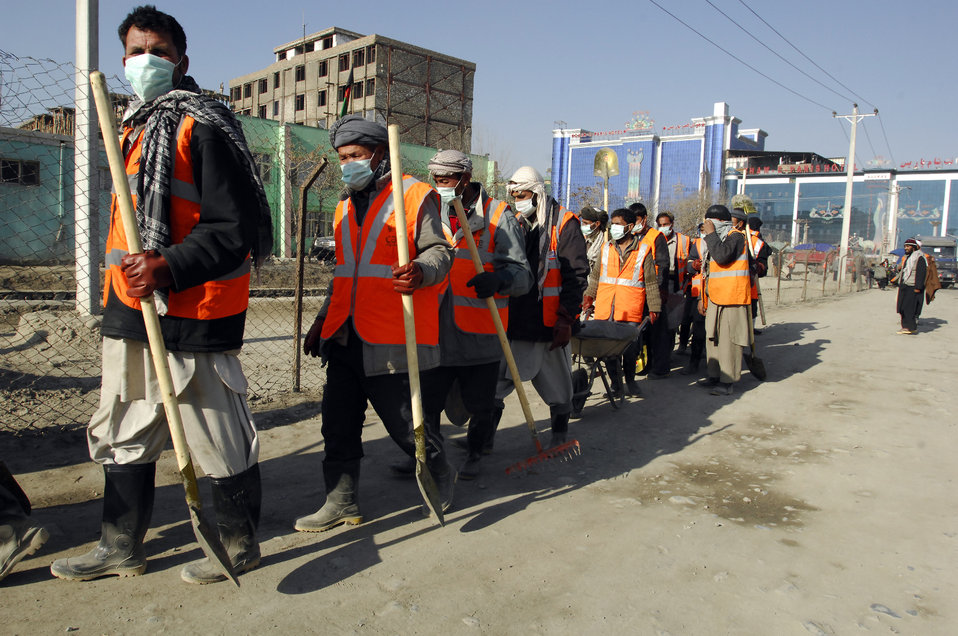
Care71